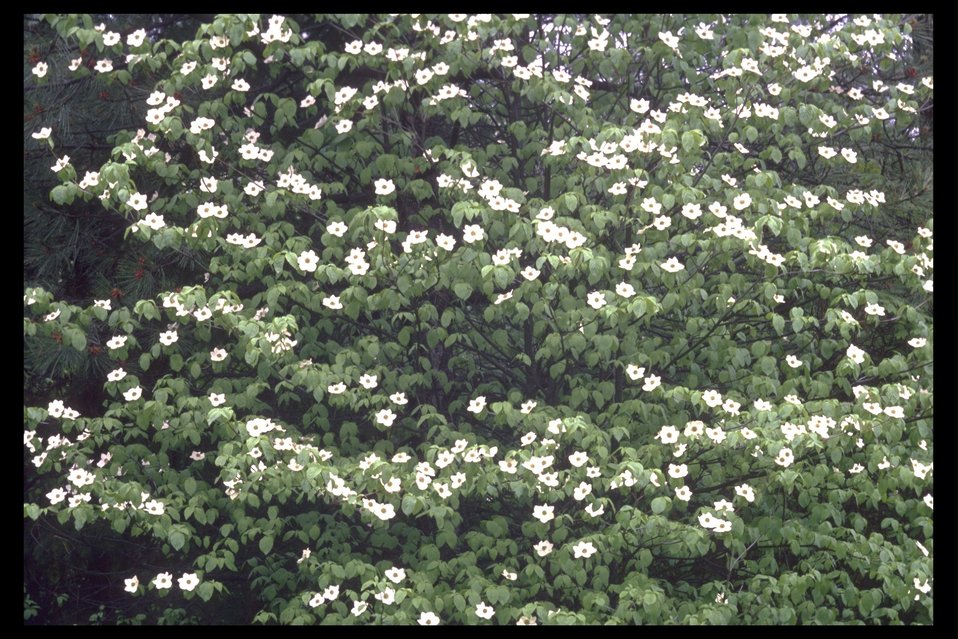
Dogwood in blossom near Red Rock Canyon.